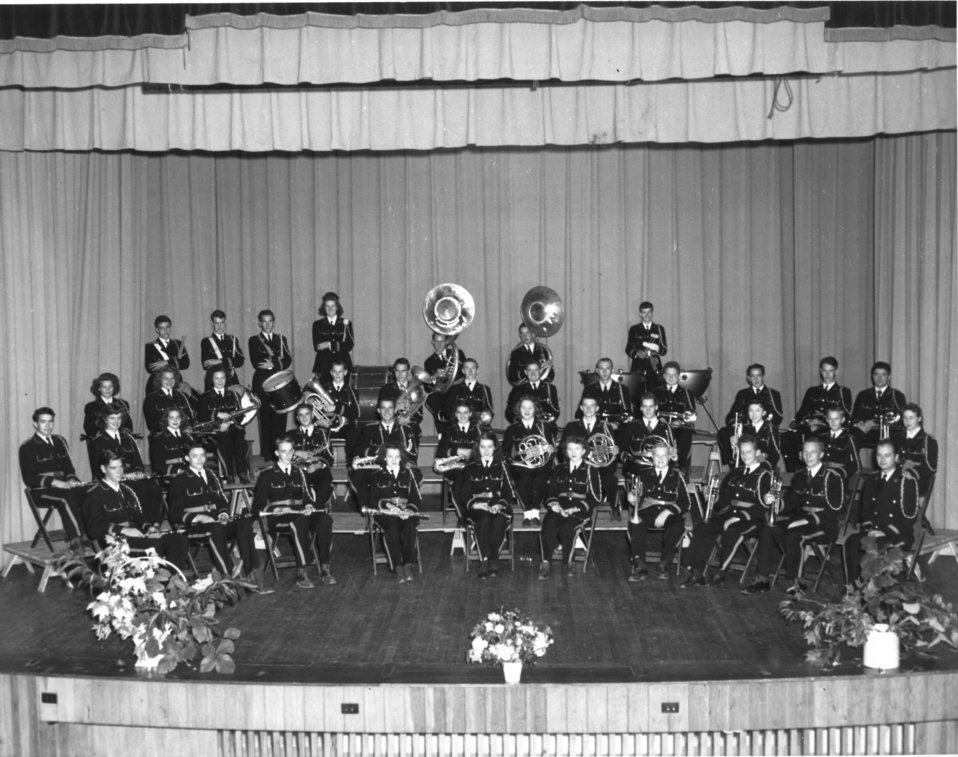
Schools at Oak Ridge